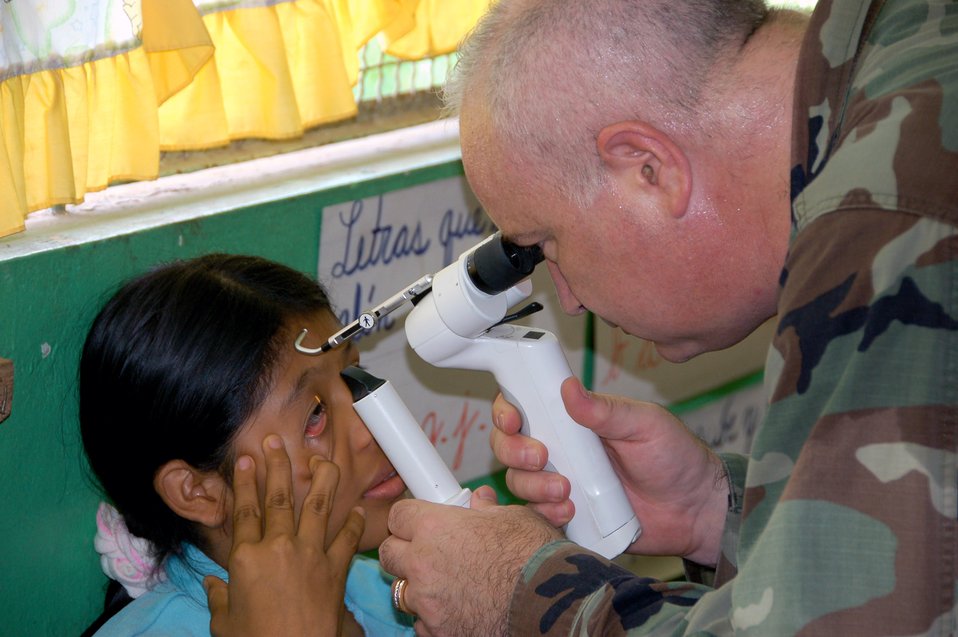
Medics in Panama see side effects of pesticide use

Maj. Darrell Grise uses a slit-lamp to look for cataracts and assess the health of the front of a patient's eye July 18 at a school in Santa Maria, Panama. Approximately 3,100 patients was seen by Air Force medics July 14 through 18. Major Grise is an optometrist deployed to Medical Readiness Training Exercise Panama from the 96th Aeromedical Dental Squadron at Eglin Air Force Base, Fla.